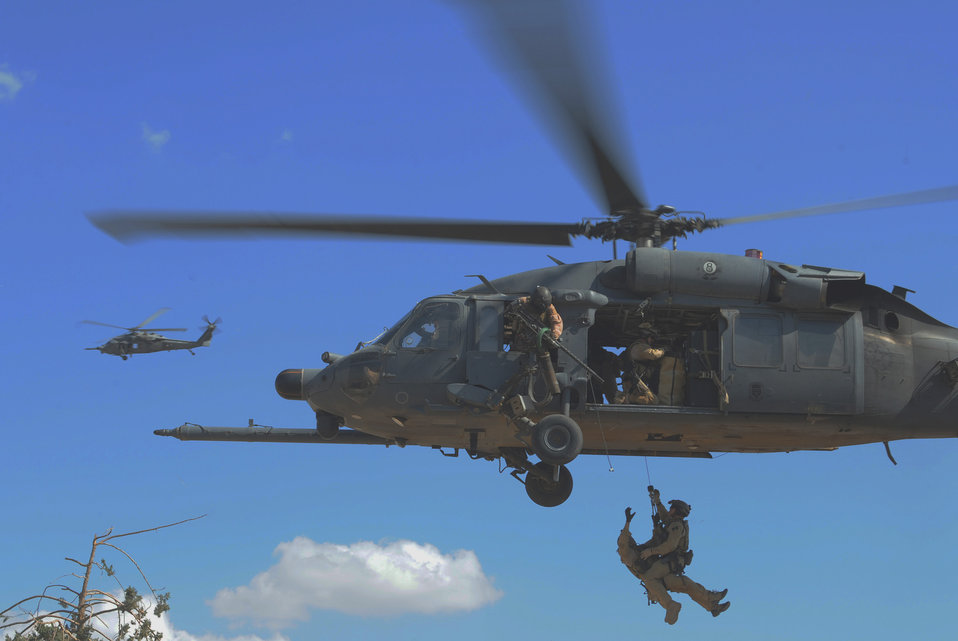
Balad squadron serves as Iraq's 'guardian angels'

A two-man pararescue team is hoisted to an HH-60 Pave Hawk helicopter in a proficiency exercise April 10 outside of Baghdad, Iraq. They are assigned to the 64th Expeditionary Rescue Squadron at Joint Base Balad, Iraq.